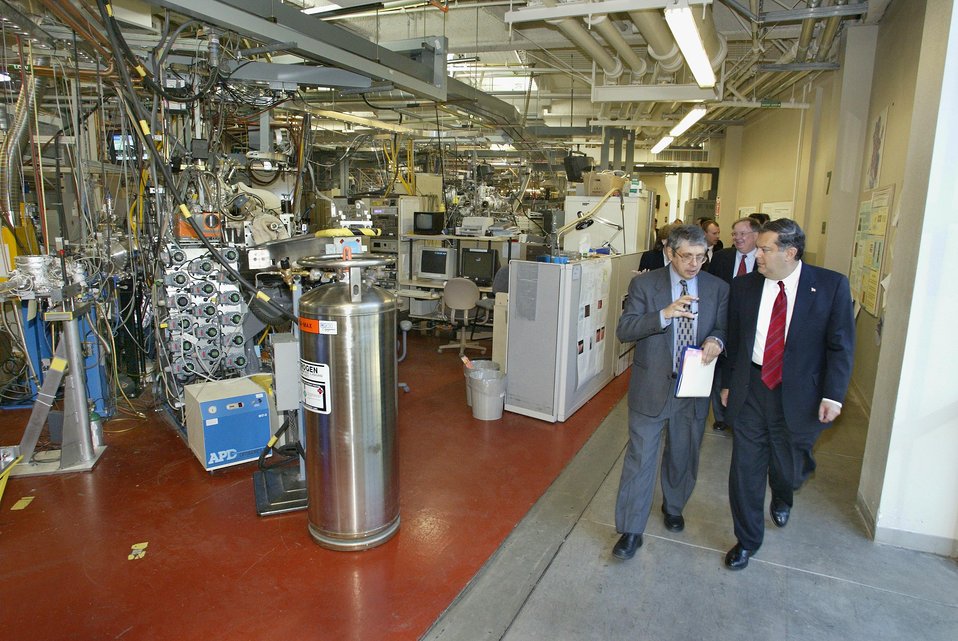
SECRETARY ABRAHAM GETTING A TOUR OF BEAM LINES FROM DANIEL CHELMA, HEAD OF LBNL'S ADVANCED LIGHT SOURCE.

THE ADVANCED LIGHT SOURCE, A DIVISION OF THE LAWRENCE BERKELEY NATIONAL LAB, IS A NATIONAL USER FACILITY THAT GENERATES INTENSE LIGHT FOR SCIENTIFIC AND TECHNOLOGICAL RESEARCH. SECRETARY ABRAHAM VISITED THE LABORATORY AND FACILITIES ON NOVEMBER 26, 2002.